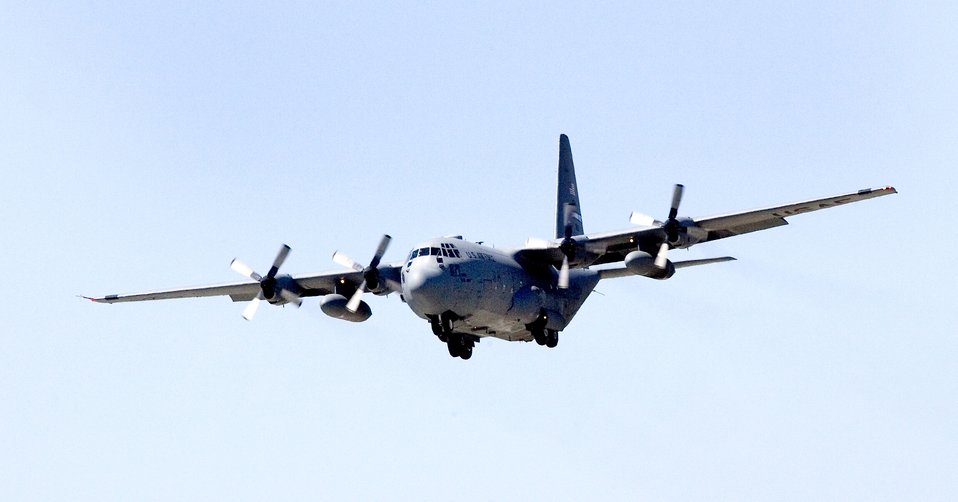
C-130 modernization program passes key milestone

The first C-130 Avionics Modernization Program aircraft, designated H2, successfully completed its maiden flight from Lackland Air Force Base, Texas, Sept. 19. Boeing test pilot Mike Leone and Air Force pilot Maj. Frank Delsing conducted the flight, which lasted approximately three hours.